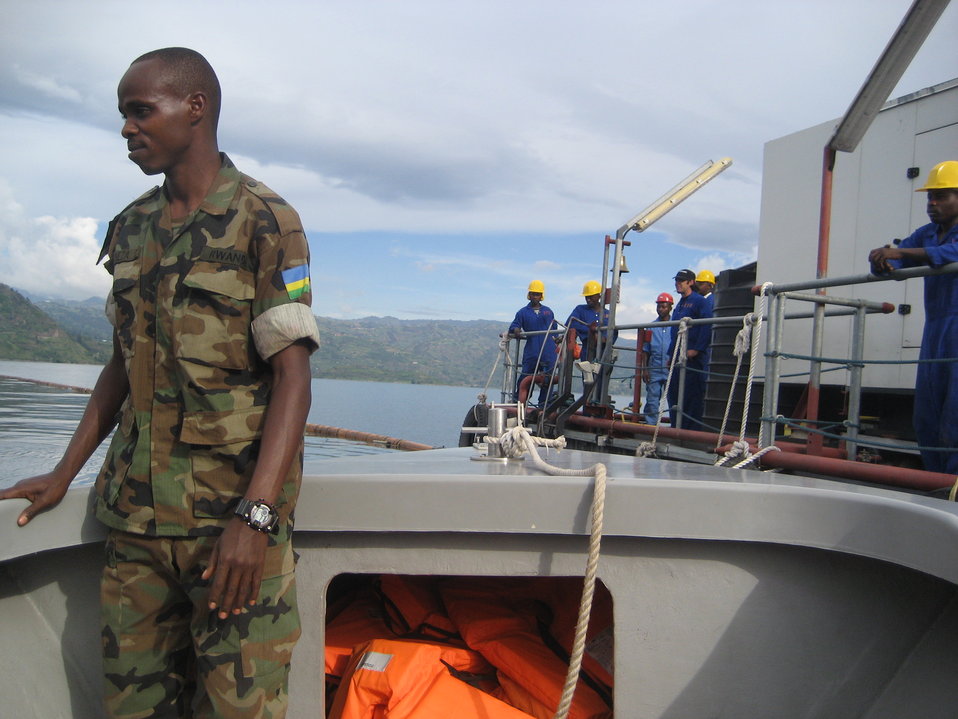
Deputy Secretary Neal Wolin’s trip to Africa 2009

Deputy Secretary Wolin arrives at the methane extraction platform for an operational briefing. Rwanda’s lack of reliable electricity is a major constraint on achieving higher rates of sustainable growth. The project is a leading example of the role that U.S. investors can play in helping Africa to address its critical infrastructure needs.